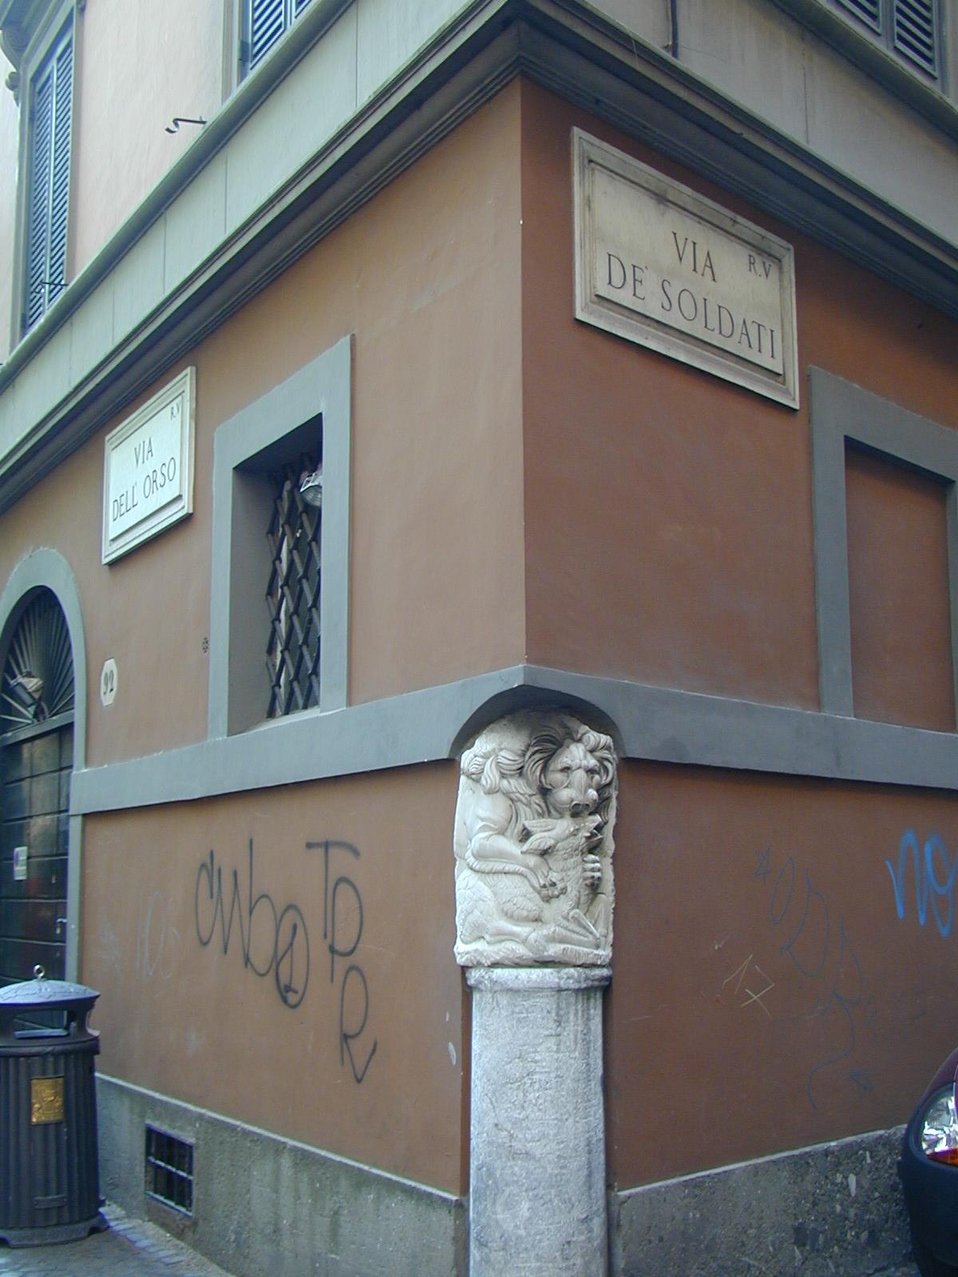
000815 5 v lo soldati leone